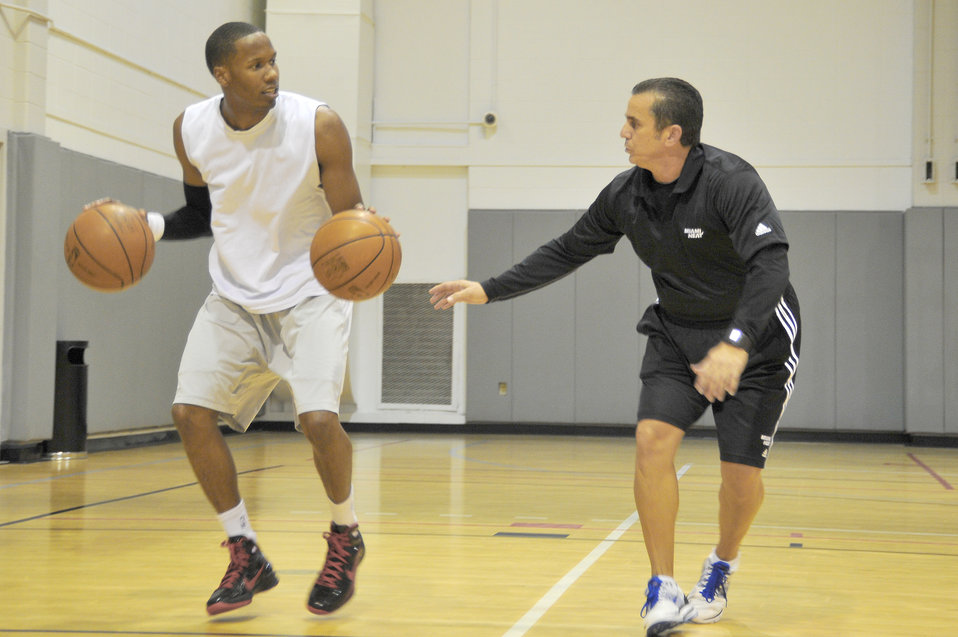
Antoine Hood

Octavio DeLagrana watches Capt. Antoine Hood work on his dribbling technique during a workout session Sept. 29, 2010, at Hurlburt Field, Fla. Captain Hood played college basketball at the Air Force Academy from 2002 through 2006 and after graduation played briefly with the NBA's Denver Nuggets. Captain Hood is assigned to the 919th Special Operations Wing and Mr. DeLagrana is a Miami Heat player development coach.